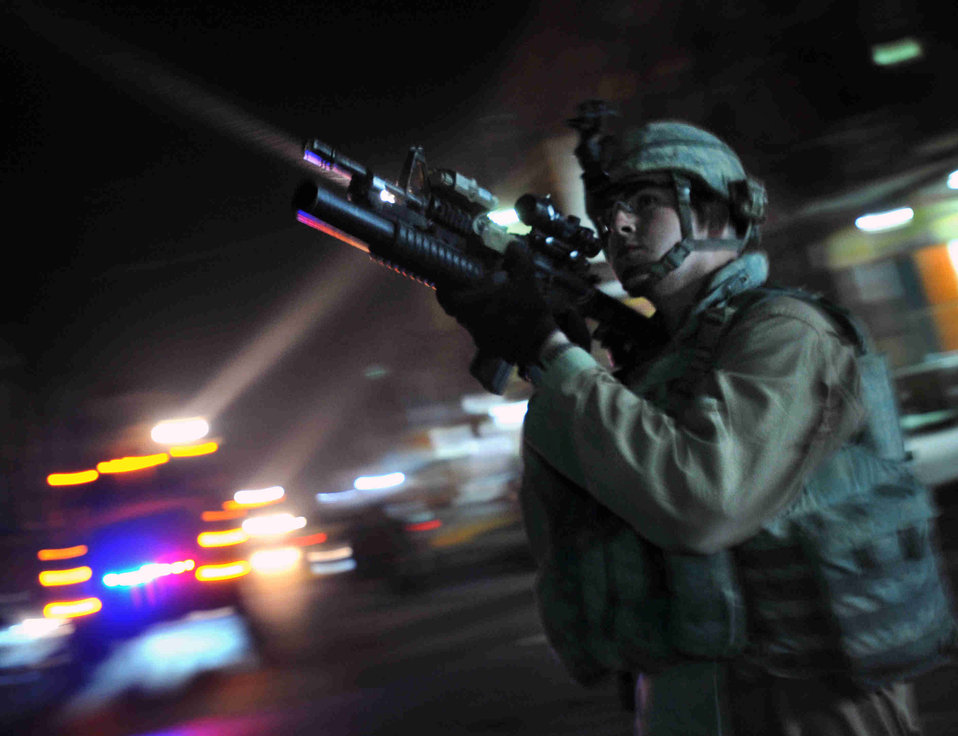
Security forces unit provides combat support to Iraq

U.S. Air Force Sgt. Jarrett Cox of Lilburn Ga., scans his perimeter during a joint walking patrol with Iraqi National Policemen in the Sadiah district of southern Baghdad, Iraq, Dec. 17, 2008.